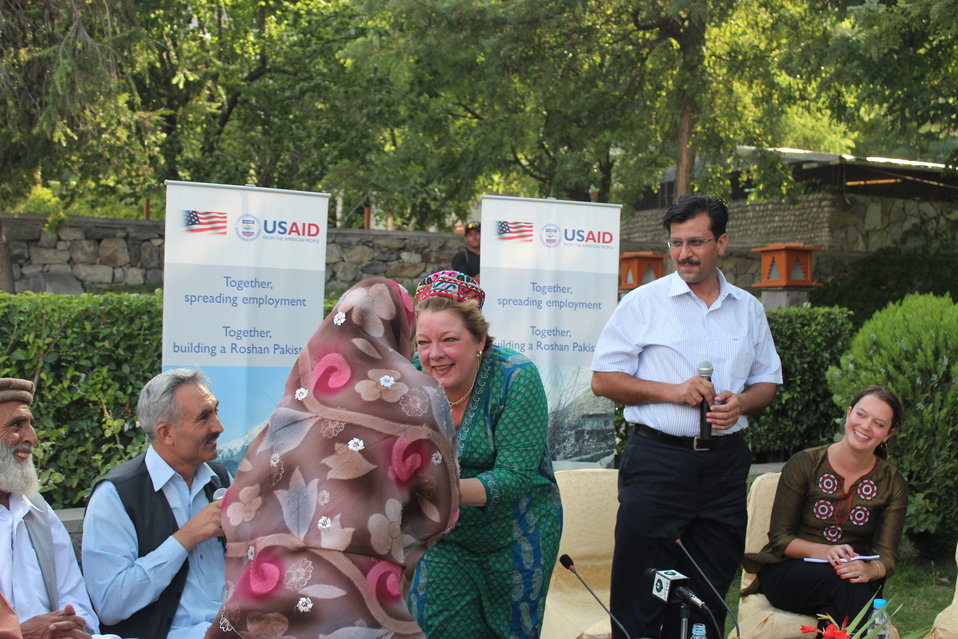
USAID Deputy Country Director Karen Freeman met with 6-8 beneficiaries from Gupis Rural Support Program

On Sunday, USAID Deputy Country Director Karen Freeman met with 6-8 beneficiaries from Gupis Rural Support Program to learn about their project funded by a USAID grant. The meeting took place at Serena Hotel in Gilgit.